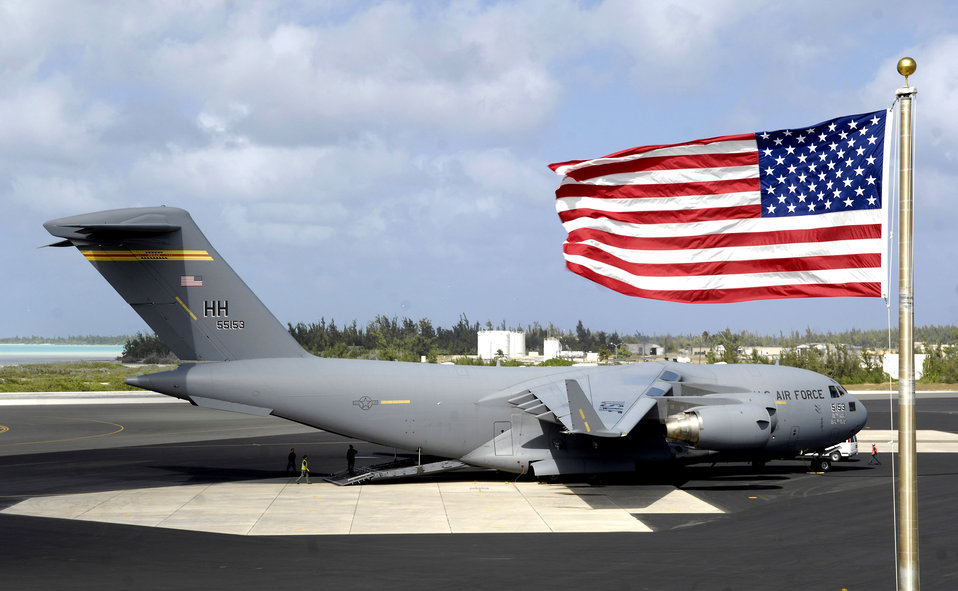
Servicemembers search for POW/MIAs on Wake Island

A C-17 Globemaster III sits on the flightline Jan. 12 at Wake Island. The C-17, from the 15th Airlift Wing from Hickam Air Force Base, Hawaii, brought members of Pacific Air Forces headquarters to conduct a site survey of the island.